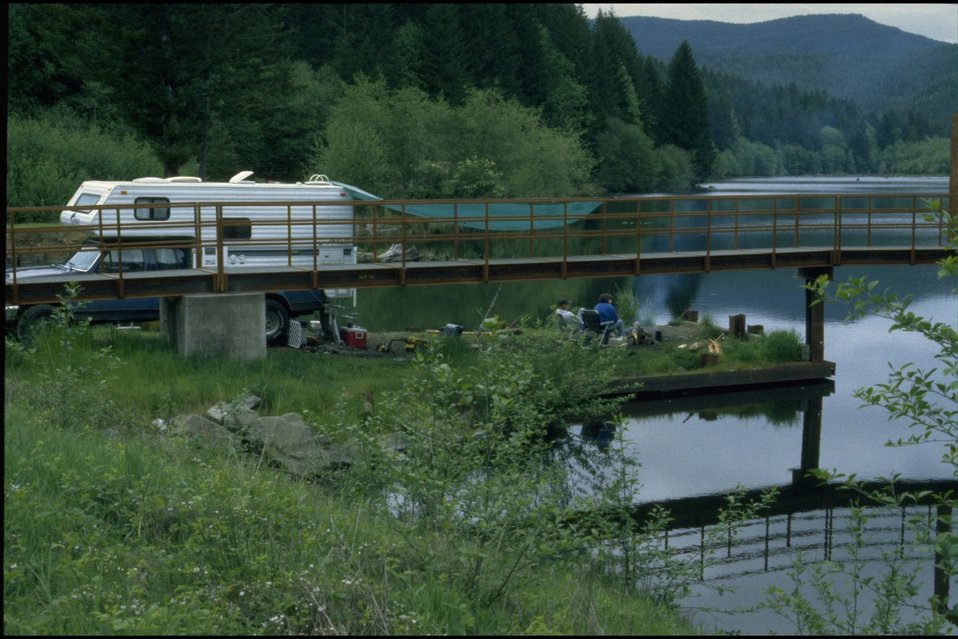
Hult Reservoir area.